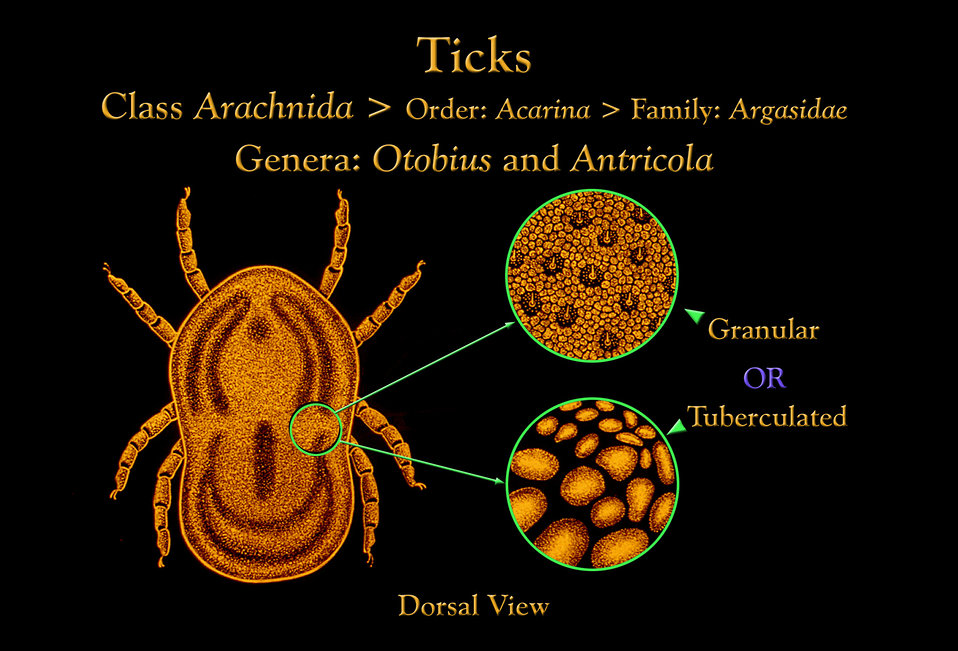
This illustration depicts the integumentary structure found on the dorsum of the Otobius and Antricola soft ticks.